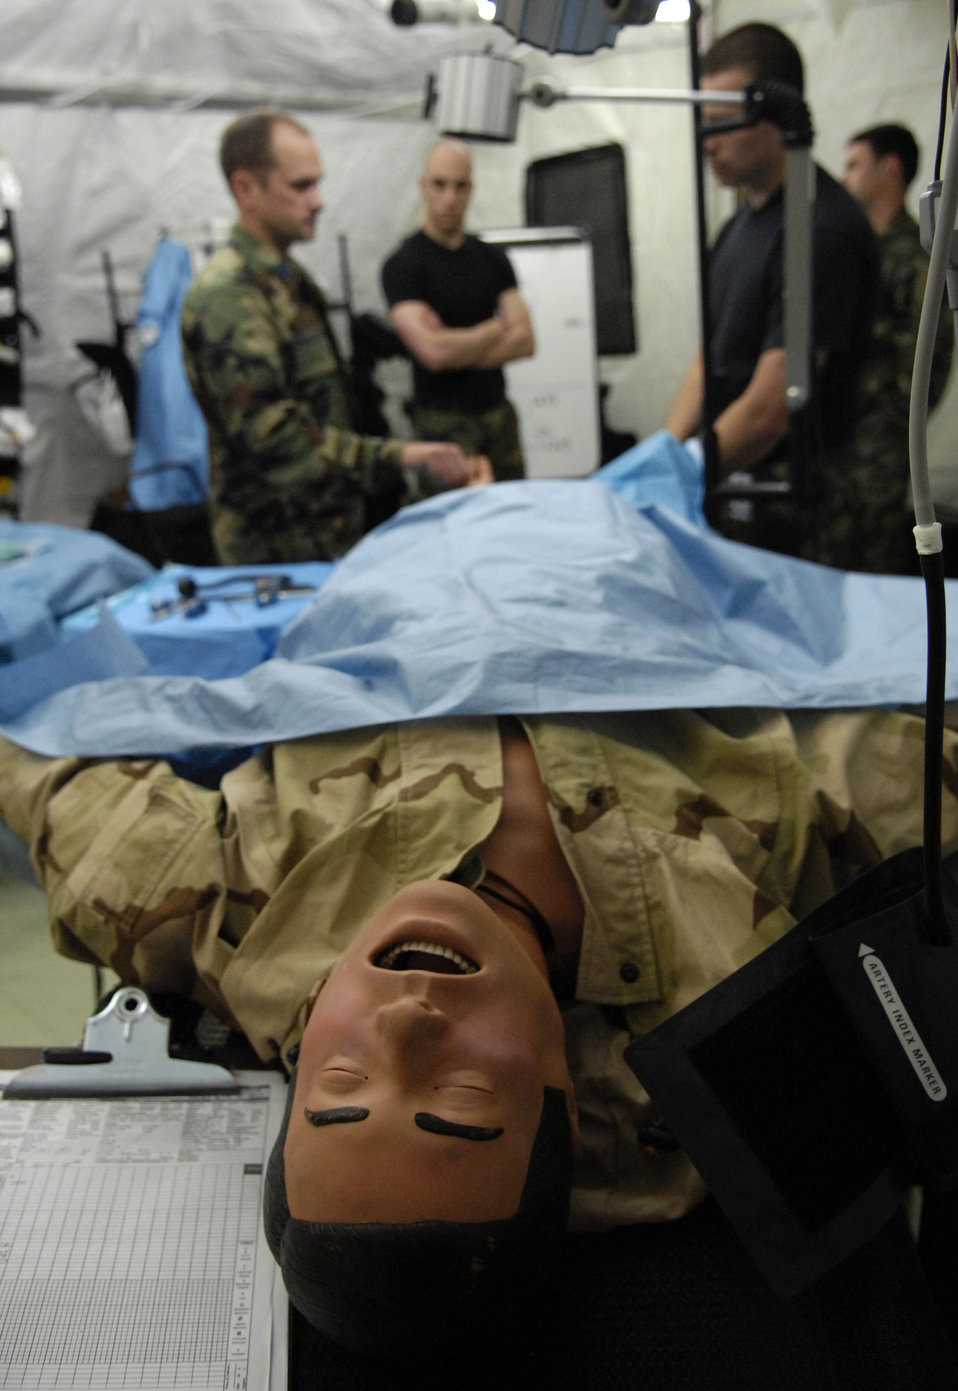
Providing a lifeline

Lt. Col. Greg Schumacher explains concept fasciotomy to medics during Exercise Pacific Lifeline Feb. 5 at Kona International Airport, Hawaii. The Airmen are from the 3rd Medical Group from Elmendorf Air Force Base, Alaska. Pacific Lifeline is a total force exercise staging from three locations within the Hawaiian Islands. It provides approximately 900 Department of Defense members a test environment to rapidly deploy and provide time-critical services in the wake of a simulated natural disaster.